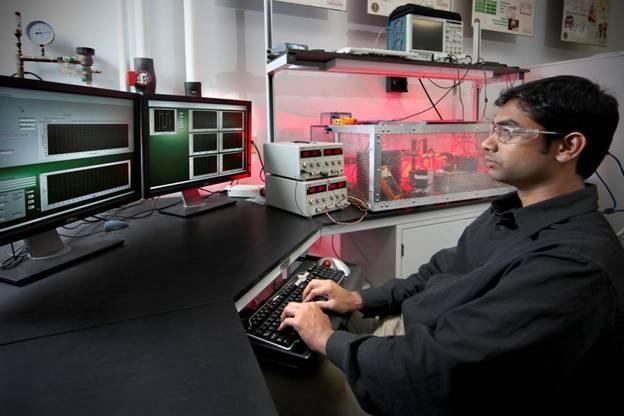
Delphi Automotive Systems is developing a novel electrical energy conversion device that will be 50 percent more efficient than existing silicon-based technologies. If successful, this project will improve the energy efficiency and cost-effectiveness of hybrid/electric vehicles and renewable energy systems (e.g., solar, wind).